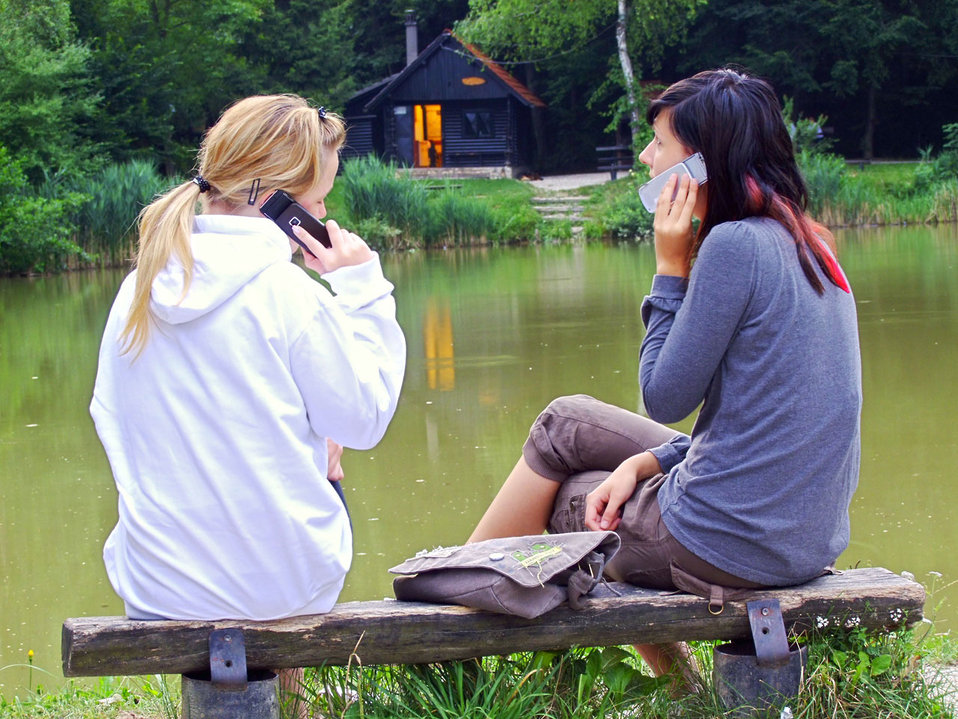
Talk

Who is talking to whom?.